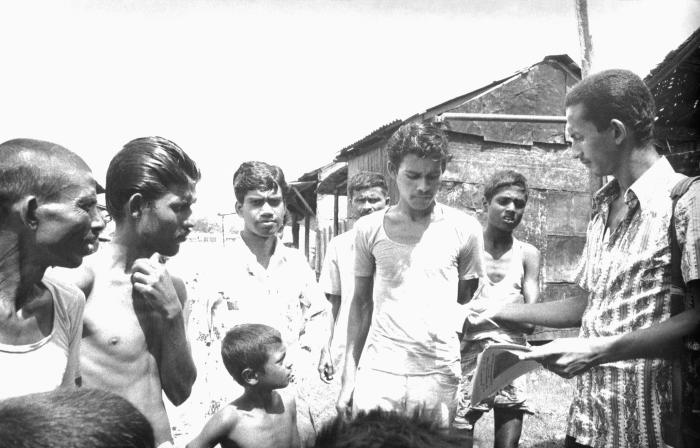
This 1975 image depicted a community volunteer smallpox eradication team member as he was handing out leaflets, which would inform residents of the facts behind smallpox symptoms, the vaccination, and the reward of 250 Taka associated with reporting a confirmed case.